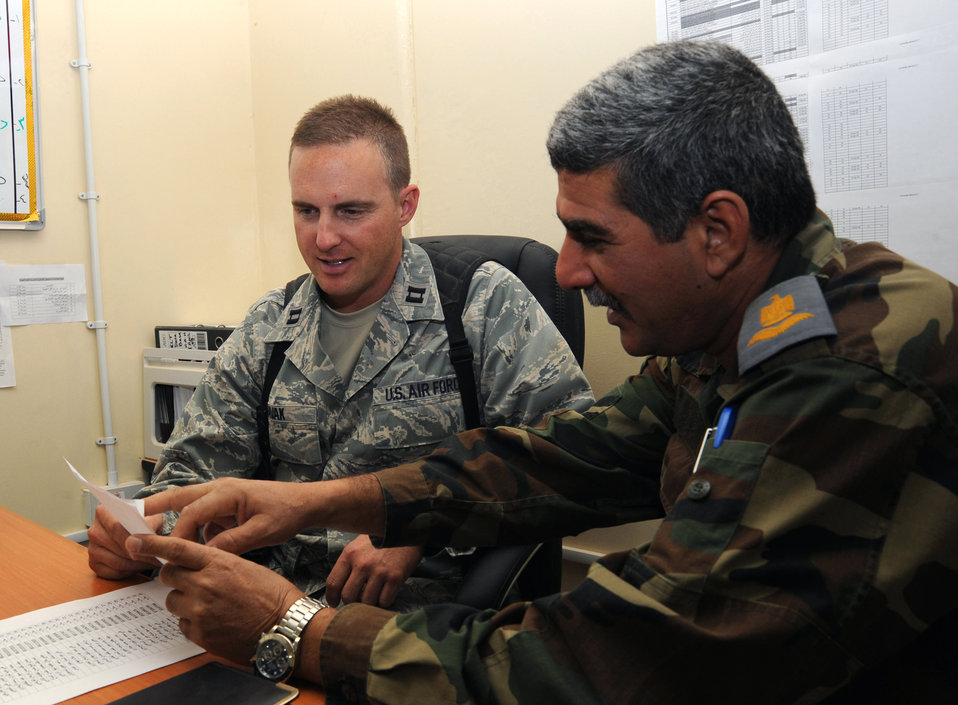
Airmen help future Iraqi pilots learn to speak English

Capt. Brian Ravak provides advisory assistance to an Iraqi air force major responsible for the Iraqi students Oct. 3, 2009, at Camp Taji, Iraq. Learning English is one of the Iraqi air force's core values, and students must successfully complete the course before moving on to pilot training. Captain Ravak is the 821st Expeditionary Training Squadron chief of English language training, and is deployed from Maxwell Air Force Base, Ala. He is a native of Cambridge, Ohio.